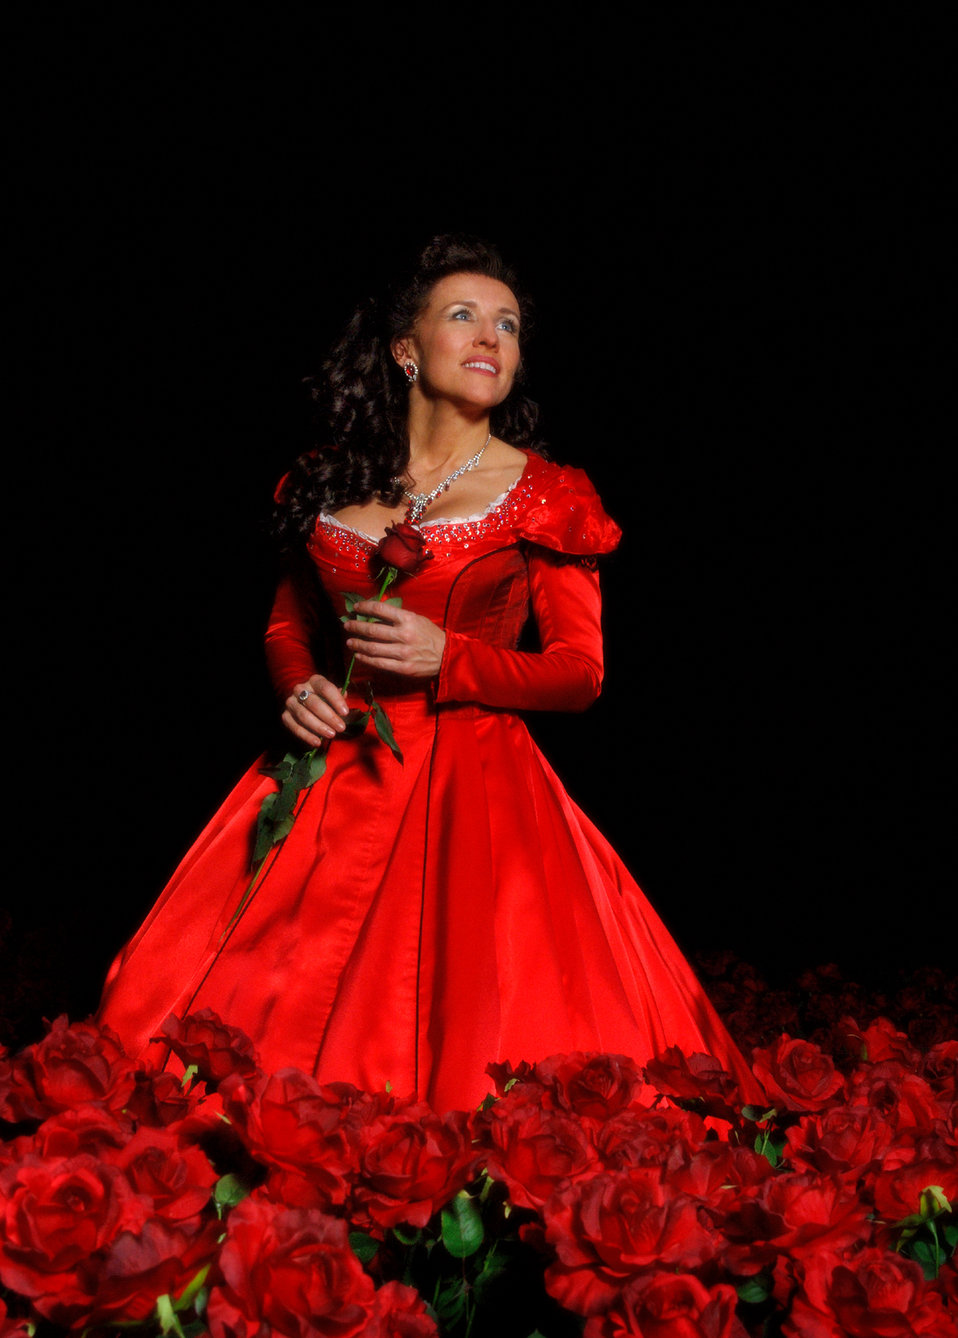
Janet Chvatal in the role of Sissi in the Musical Ludwig2 Deutsch: Janet Chvatal in der Rolle von 'Sissi' im Musical „Ludwig2“